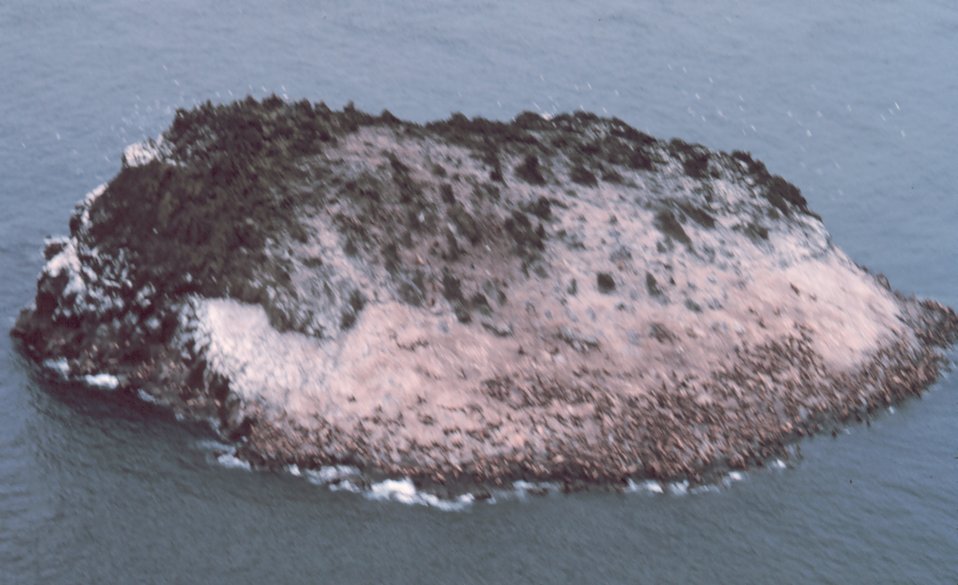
Walrus herd ? on island.